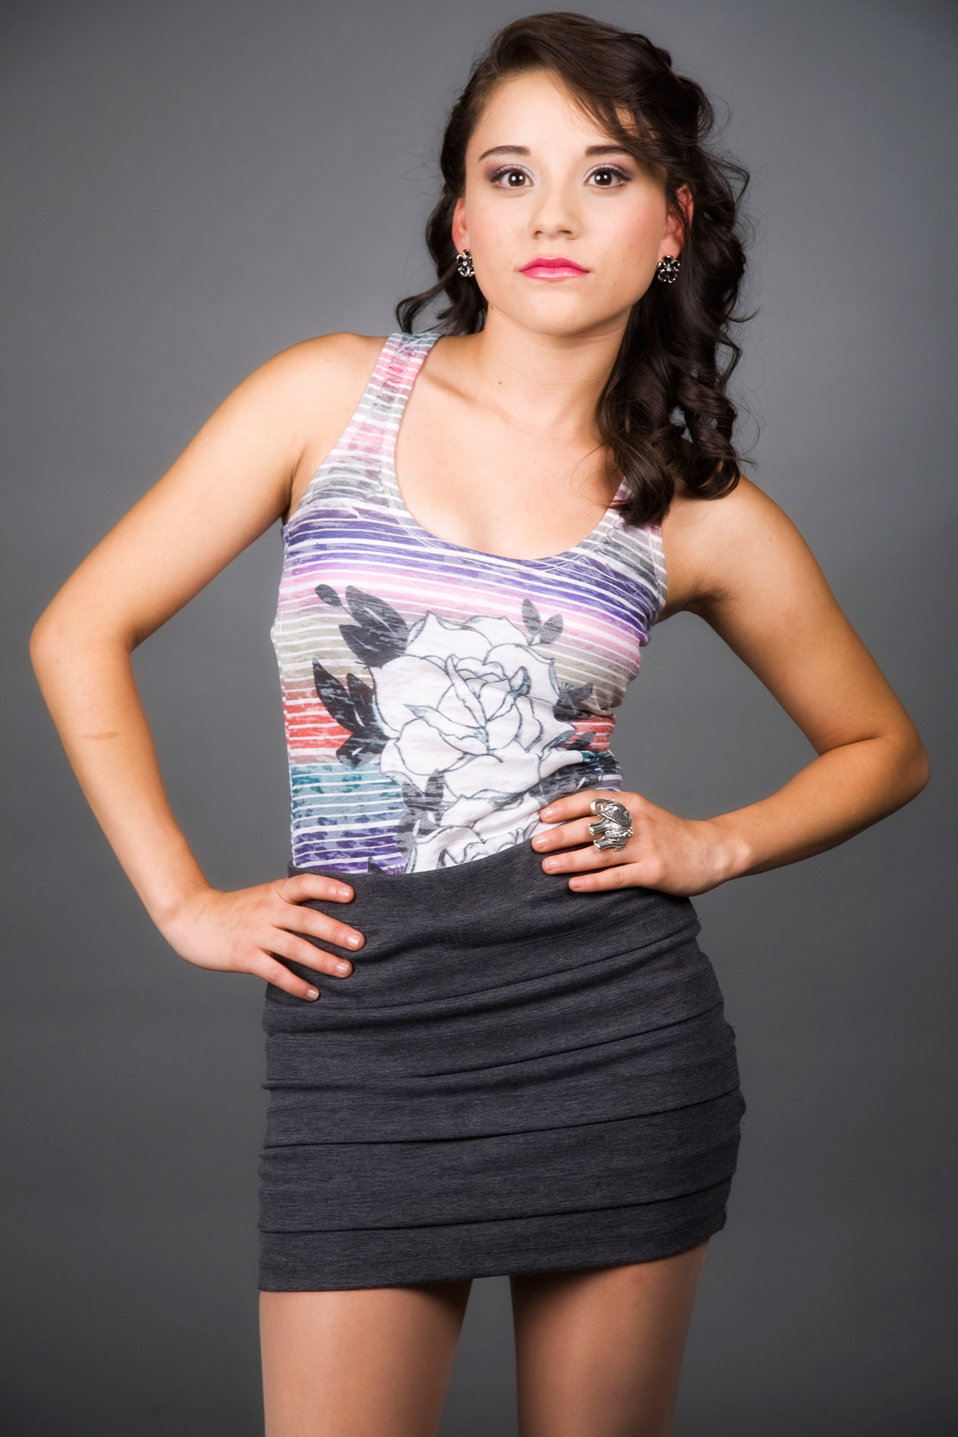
Mairani cuevas.